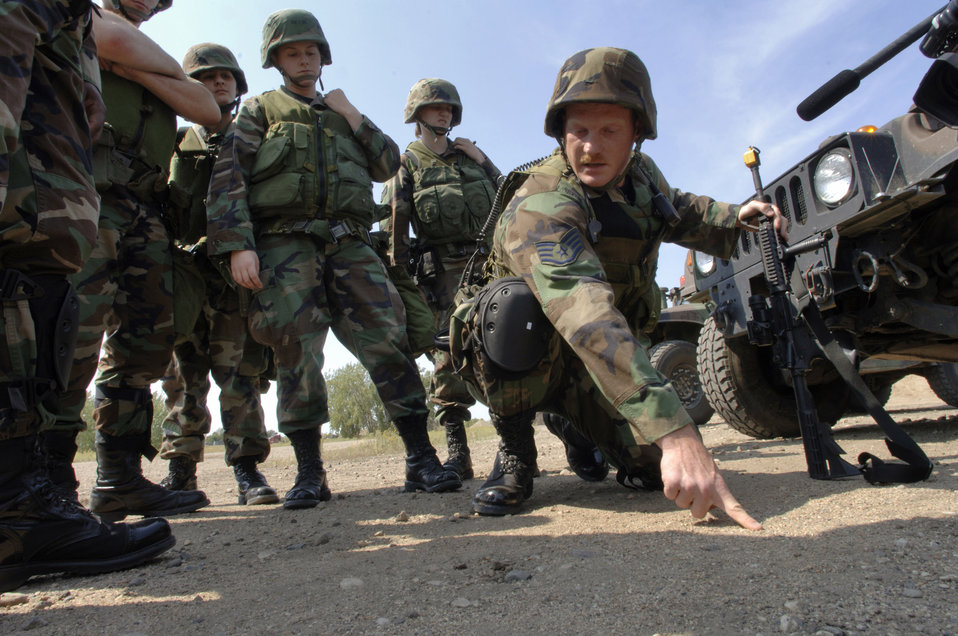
Unique mission: Guarding 91st Space Wing missile complex

Staff Sgt. Aaron Williams draws a tactical attack diagram for his team during a coordinated security training exercise at a Minuteman III launch training facility Aug. 22. The NCO is with the 91st Missile Security Squadron, Minot Air Force Base, N.D., from Orlando, Fla. The team will use HUMVEEs to enter the facility grounds and sweep the area after a simulated grenade attack that should clear the area of living enemy attackers.